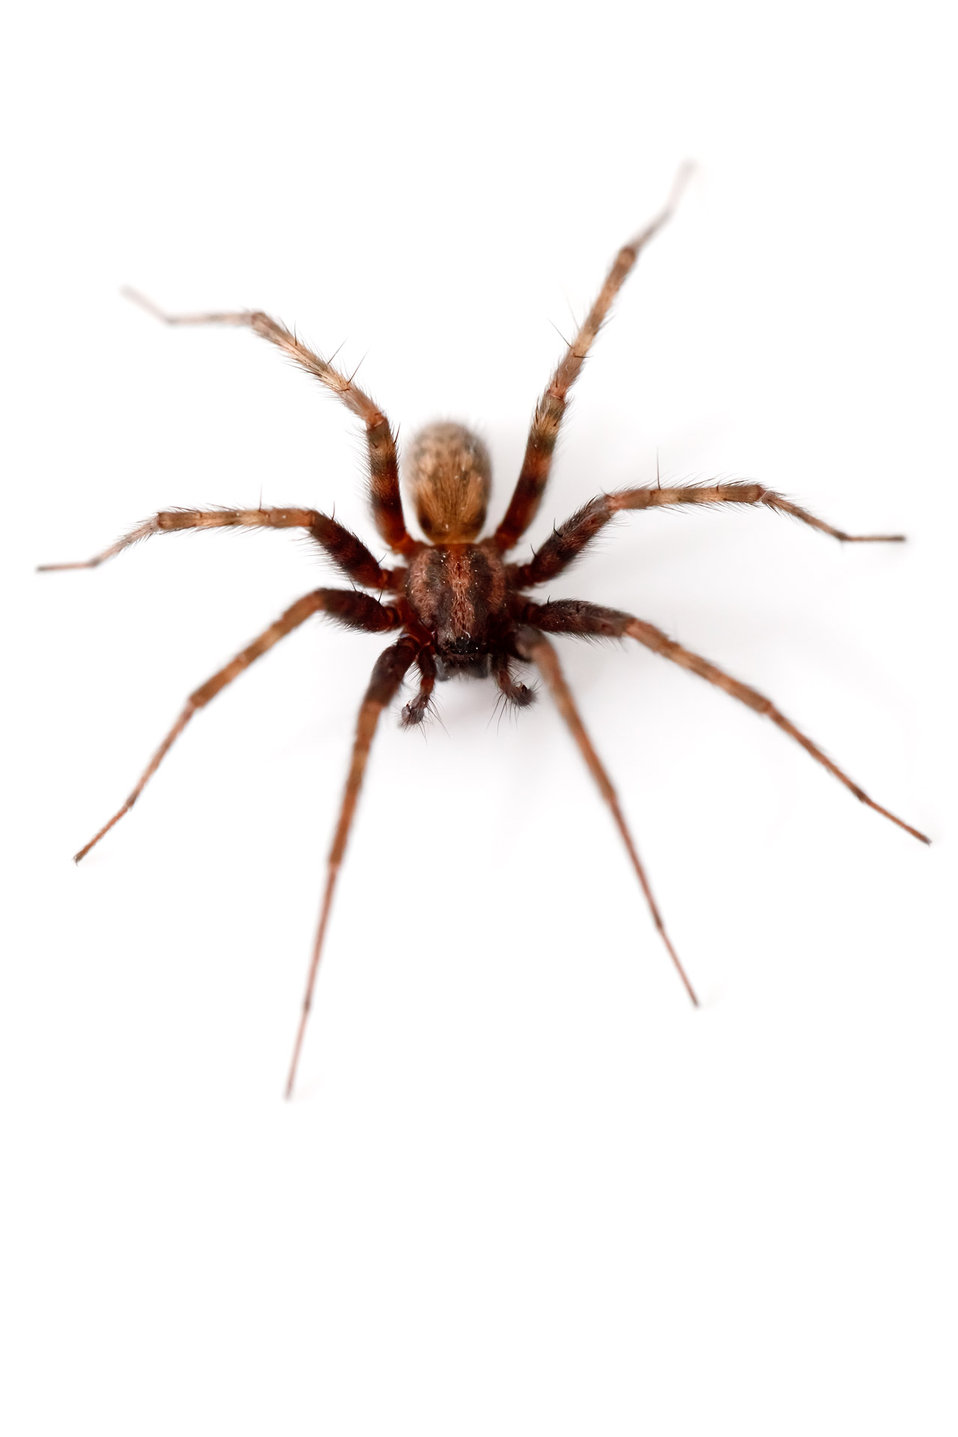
Spider isolated

Big brown spider isolated on white background.